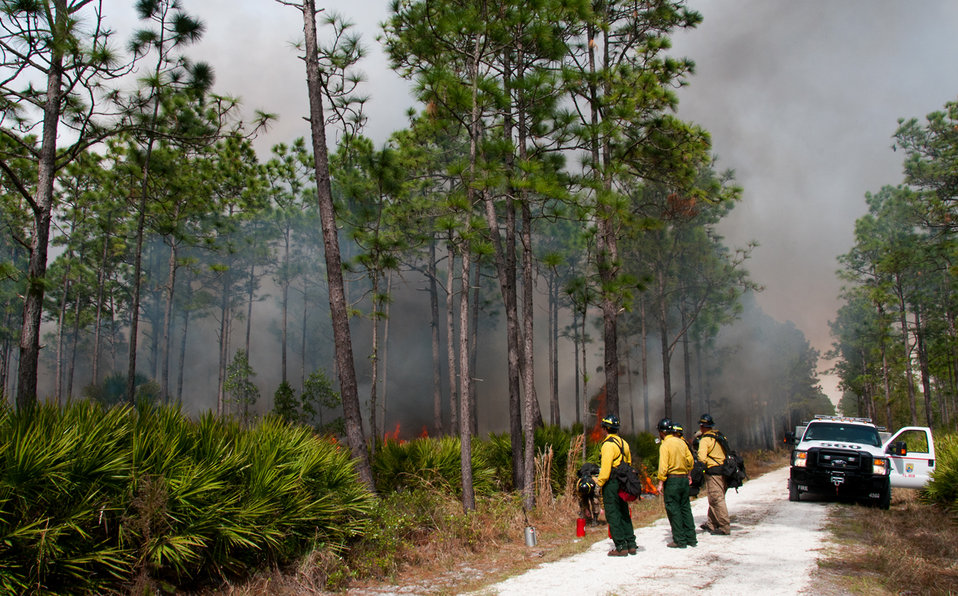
Lake Woodruff Volusia 5 Prescribed Fire Febuary 2014

USFWS firefighters gather up to refuel drip torches and get water. On February, 12 2014 USFWS firefighters conducted a 137 acre prescribed fire at Lake Woodruff NWR to reduce the wildfire risk and enhance the wildlife habitat on the southern end of the refuge.